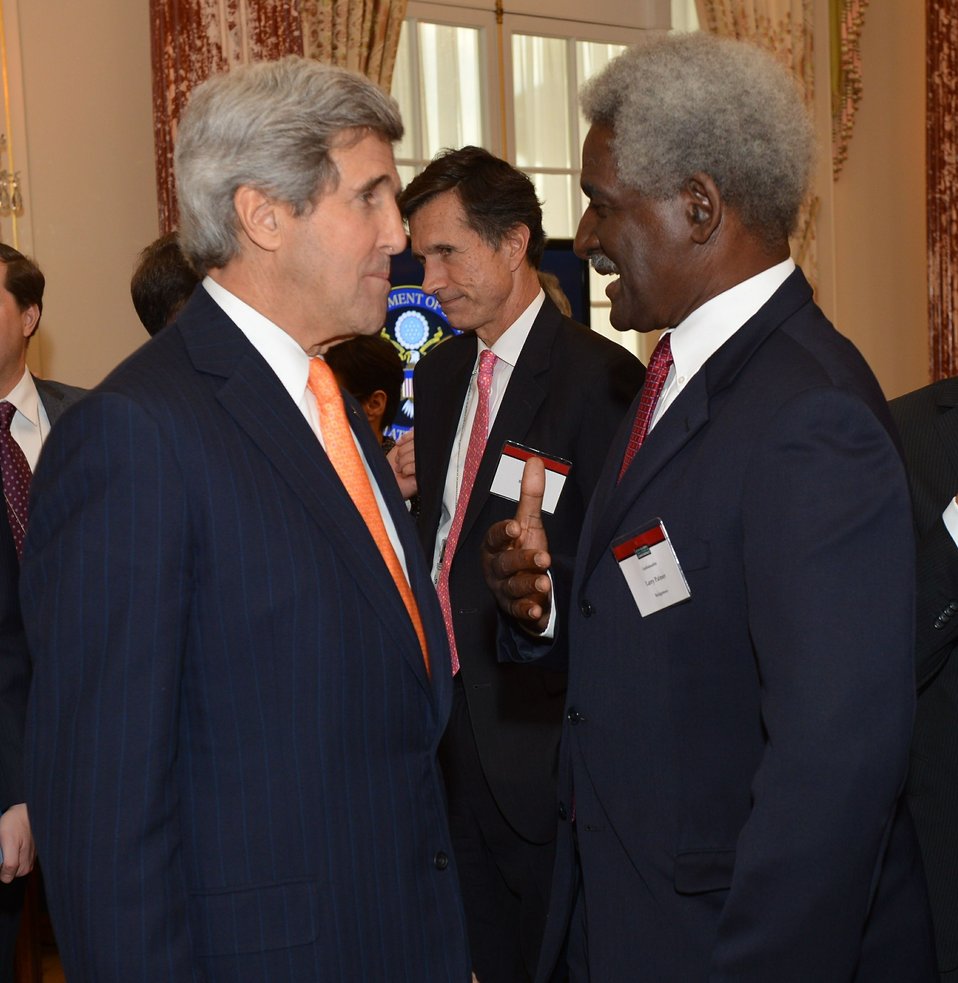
Secretary Kerry Chats With Ambassador Palmer

U.S. Secretary of State John Kerry chats with U.S. Ambassador to Barbados and the Eastern Caribbean Larry Palmer at the Global Chiefs of Mission Conference luncheon at the U.S. Department of State in Washington, D.C., on March 10, 2014.